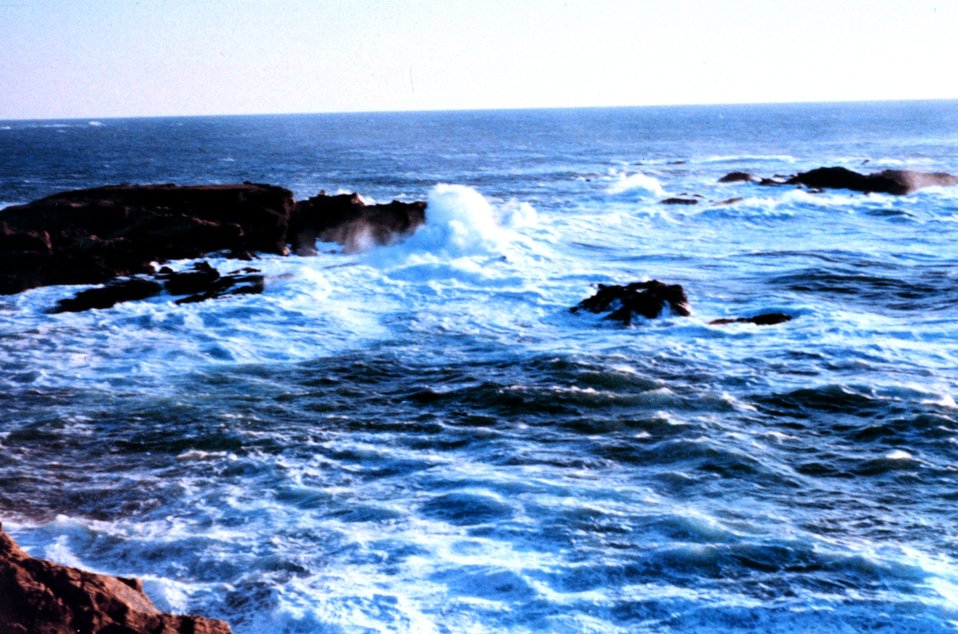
The meeting of sea and land at Point Lobos.